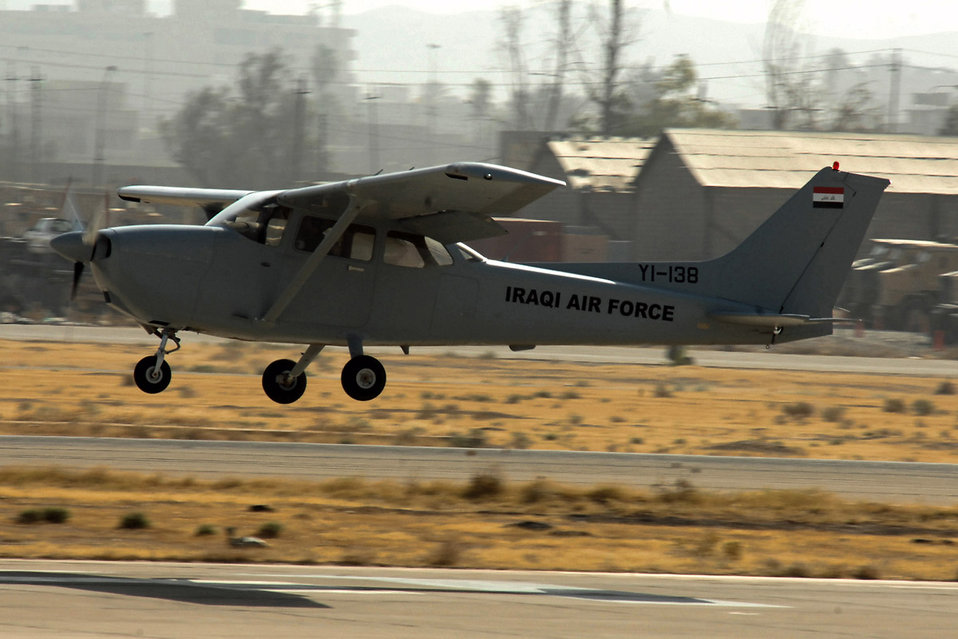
Iraqi air force reaches 2,000-hour milestone

Capt. Jamie Riddle, a 52nd Expeditionary Flying Training Squadron instructor pilot, and 2nd Lt.